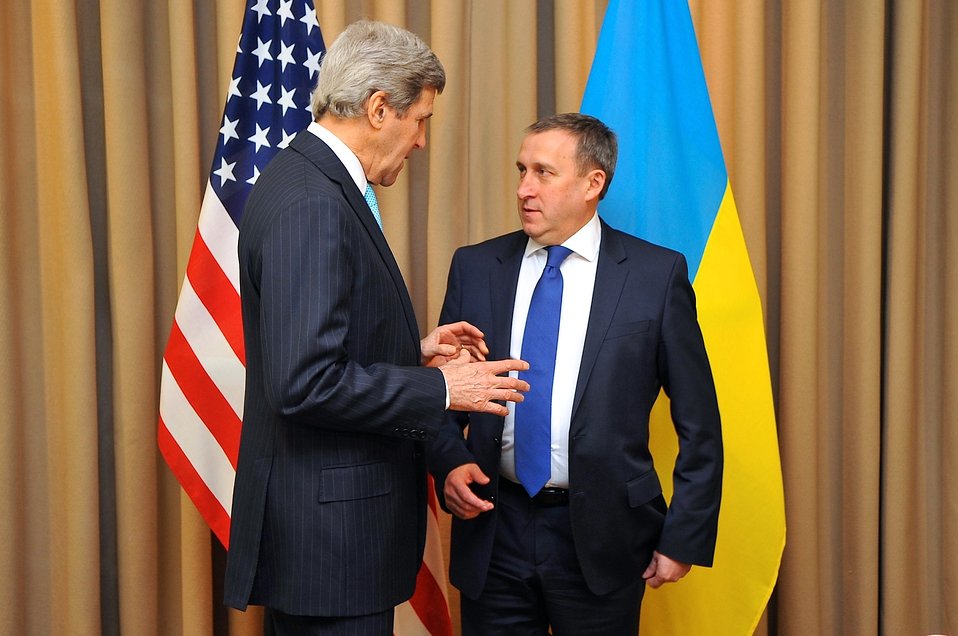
Secretary Kerry Shakes Hands With Ukrainian Foreign Minister Deshchytsia Before Meeting With Russians

U.S. Secretary of State John Kerry shakes hands with Ukrainian Foreign Minister Andrii Deshchytsia before the two joined with Russian and European Union officials for four-way talks about Ukraine in Geneva, Switzerland, on April 17, 2014.